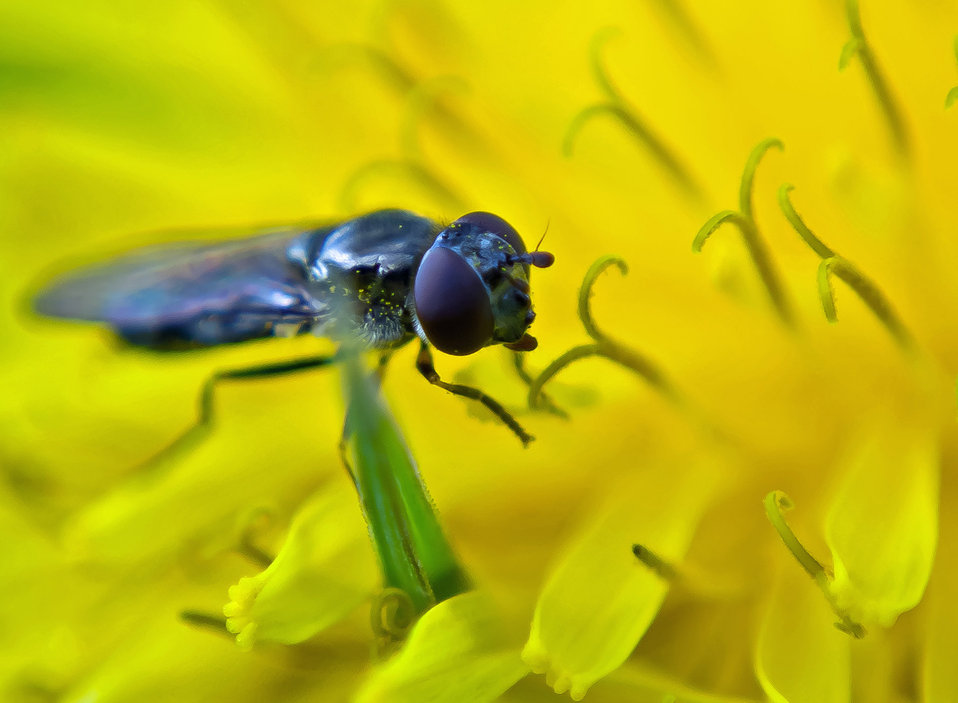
Fly on a yellow leaf.